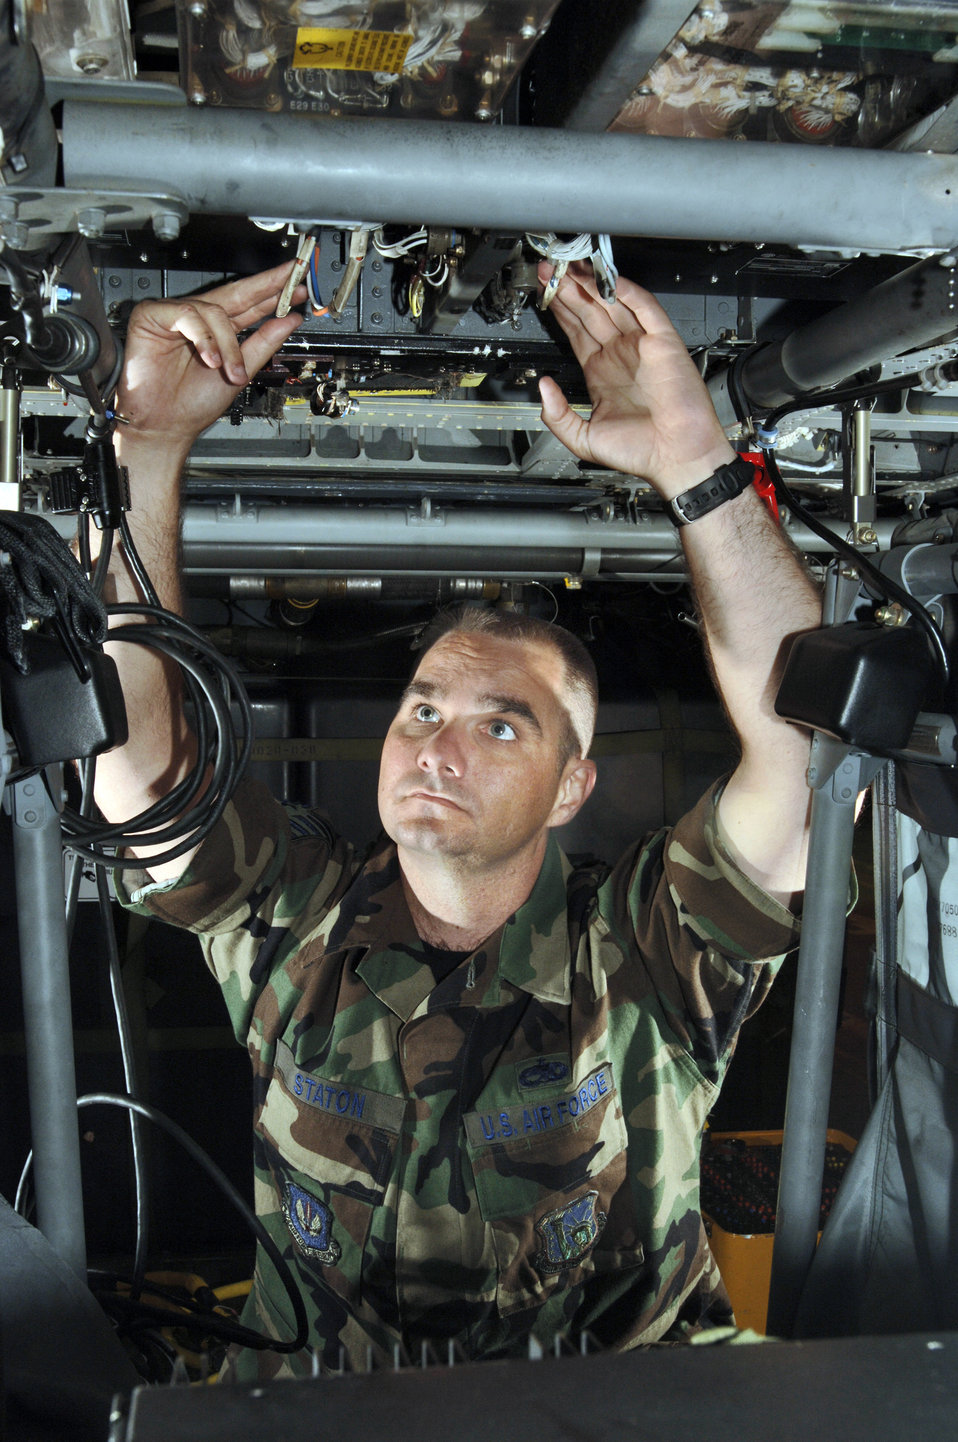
Rescue unit faces moving challenges

Tech. Sgt. Noel Staton inspects the electrical system of an HH-60G Pave Hawk helicopter at Royal Air Force Lakenheath, England, on Aug. 2. The NCO is with the 56th Aircraft Maintenance Unit. The unit supports the 56th Rescue Squadron, which moved here from Keflavik Air Base, Iceland, in May.